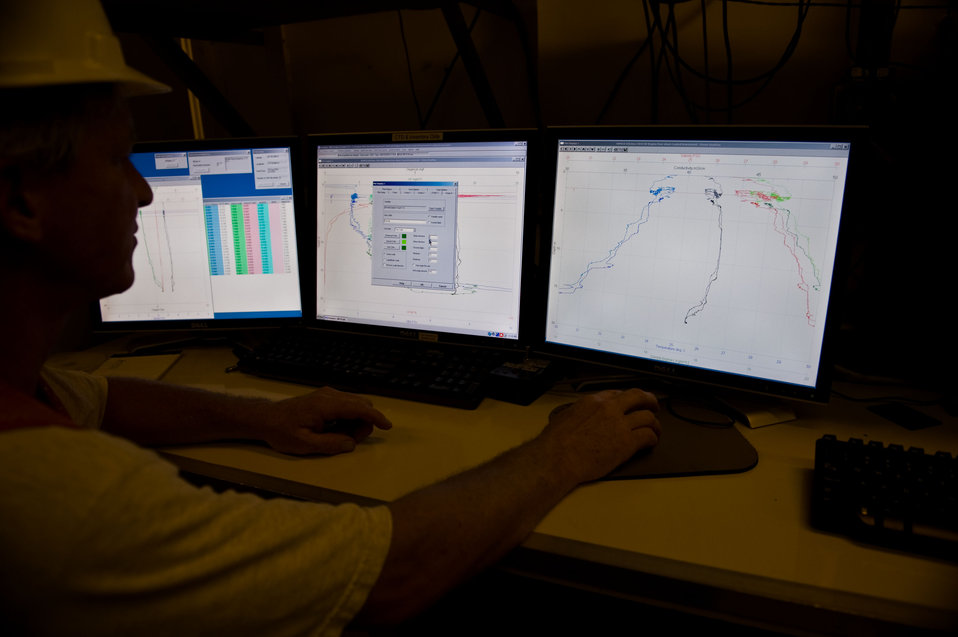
August 2010, Monitors displaying real-time data transmitted from the CTD

Conductivity, Temperature Depth (CTD). data plots of variables recorded as the CTD device is lowered through water column.